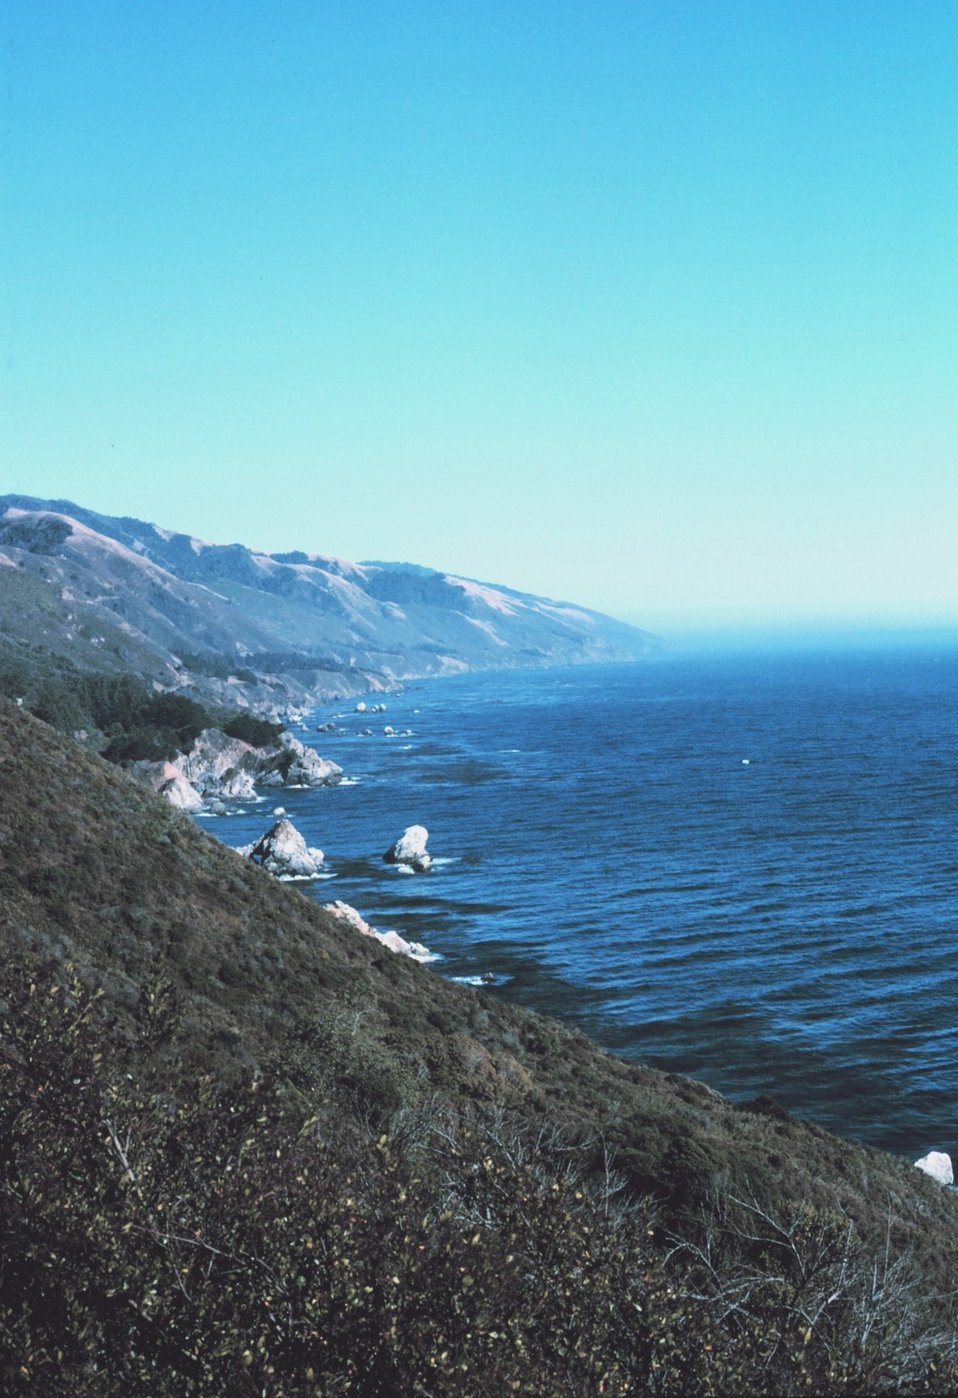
The Big Sur coastline as seen while traveling along Highway 1